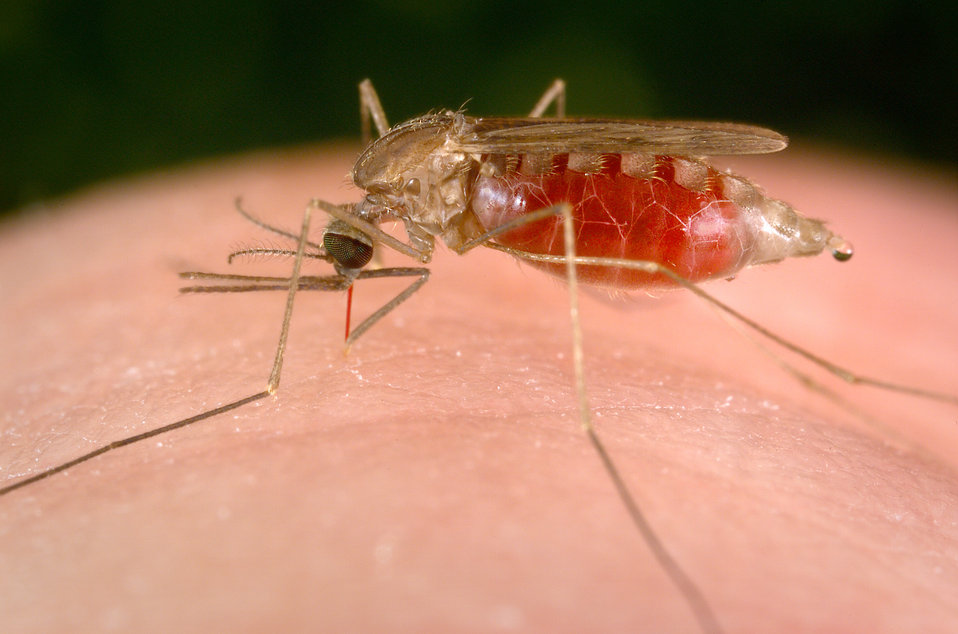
This female Anopheles freeborni is taking a blood meal from a human host by pumping the ingested blood through her 'labrum', which is visible here as a thin red, 'needle-like' structure between the mosquito's head and the host's skin.